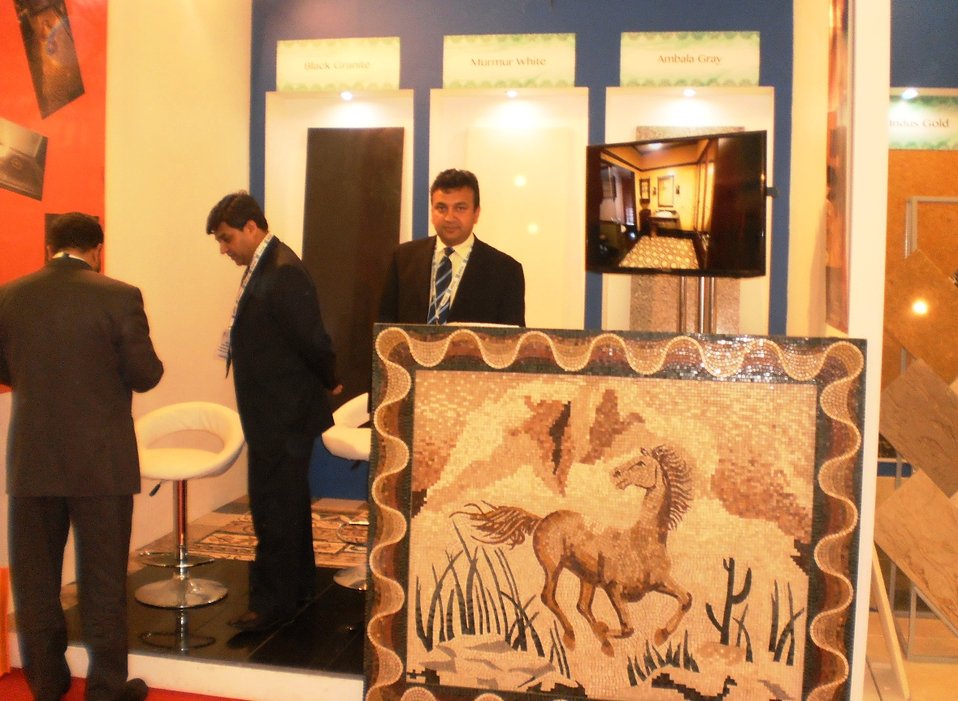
USAID Firms Project Marble and Granite sector participates in the BIG 5, largest construction show of Saudi Arabia

The USAID Firms Project’s stall at the exhibition provided the partner businesses an opportunity to showcase Pakistan’s top quality natural stone products including slabs, tiles, mosaic inlays, and medallions to the international buyers